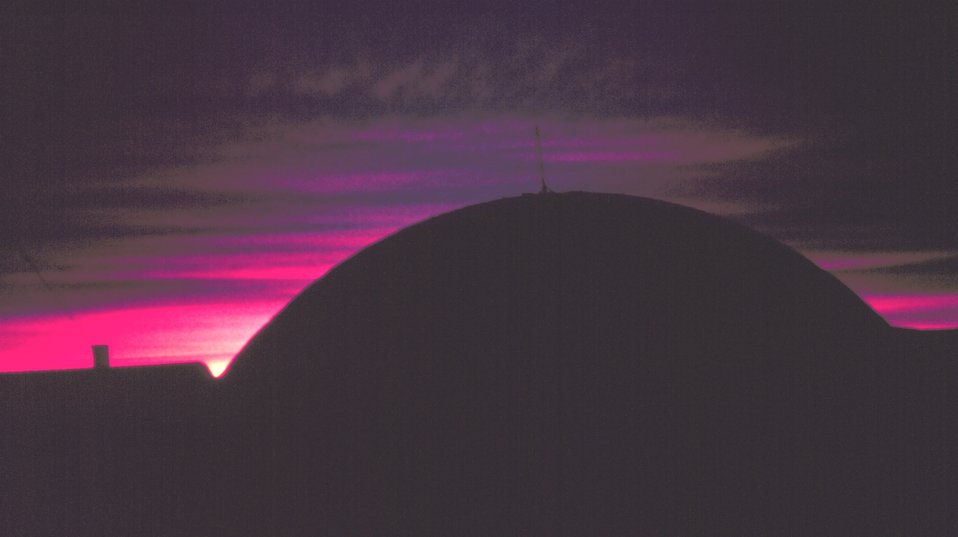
South Pole geodesic dome illuminated by last gasp of sunset